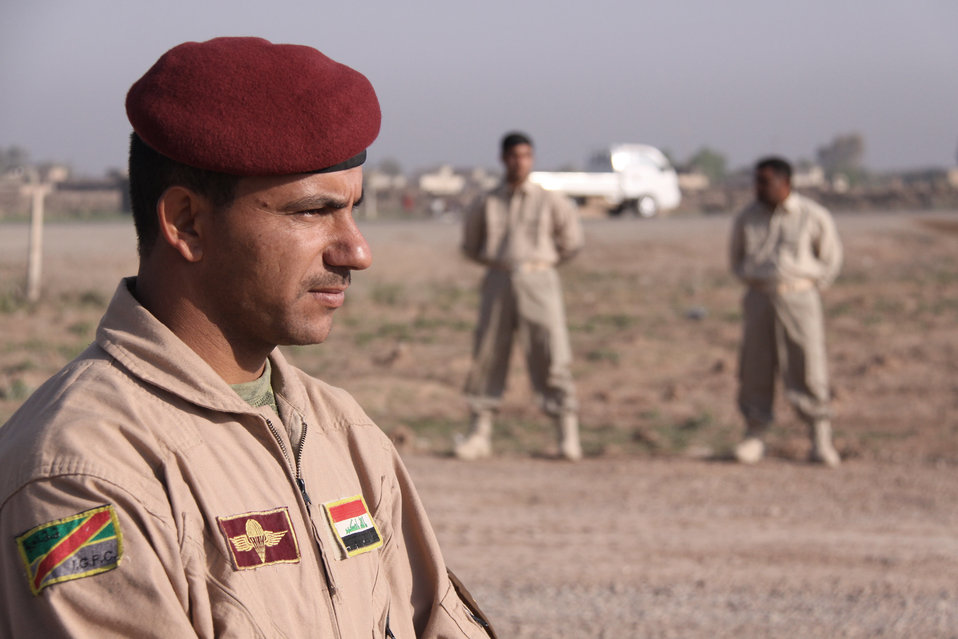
Iraqis provide new line of security for Joint Base Balad

Arafat, one of the Iraqi security supervisors, checks his team at the base perimeter at Joint Base Balad, Iraq, April 1, the first day a new security initiative took effect here. More than 100 Iraqis from the surrounding area now serve as vehicle and pedestrian screeners around the perimeter of JBB to reduce the risk of improvised explosive device attacks against JBB.